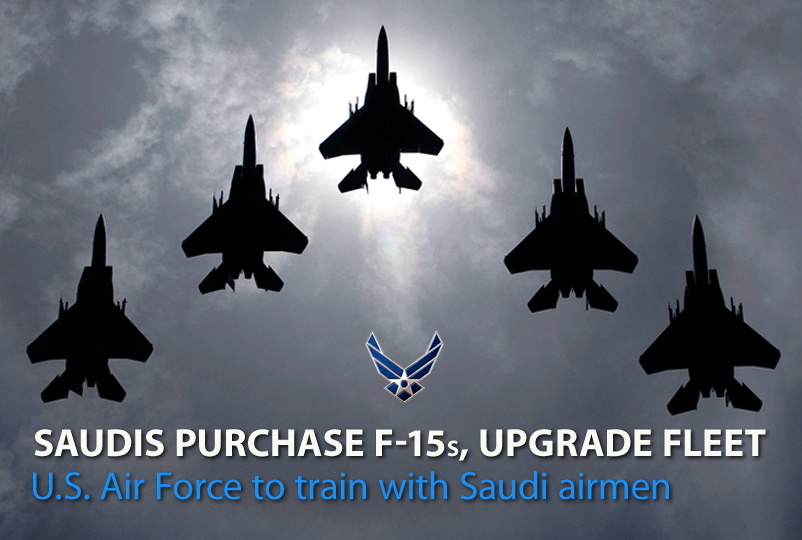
Saudis purchase F-15s, upgrade fleet

Air Force officials announced the next chapter in a partnership with the Royal Saudi Air Force as the Kingdom of Saudi Arabia recently signed a $29.4 billion Foreign Military Sales Letter of Offer and Acceptance solidifying their plans to purchase 84 F-15SA fighter aircraft and upgrade their current fleet of 70 F-15S aircraft to the SA configuration.